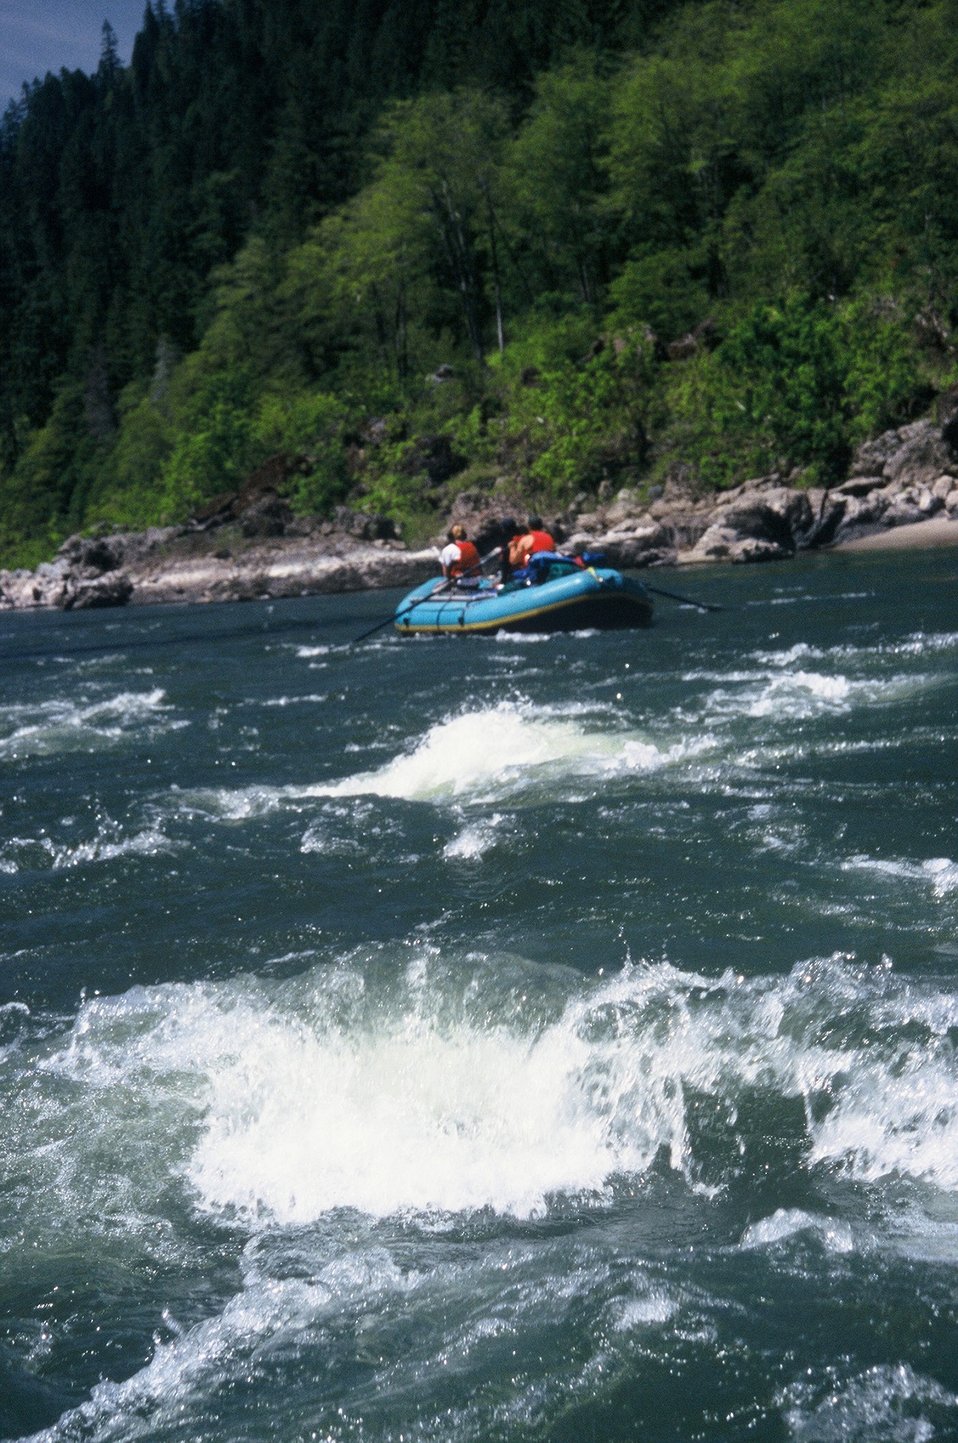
Wild section of the Rogue River from Grave Creek to Foster Bar May 19 to May 22.